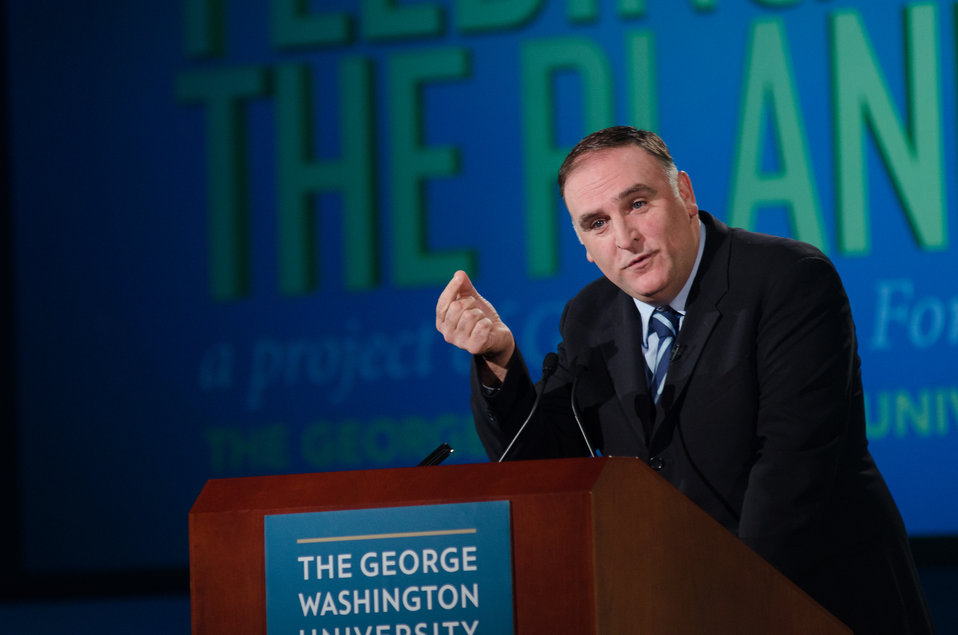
Jose Andres, Chef/Owner of ThinkFoodGroup, Founder of World Central Kitchen, and Culinary Creator and Advocate, speaking at the Feeding the Planet Summit of leaders from agriculture, business, finance, academia, Non Governmental Organization, government and media, along with a large contingent of college students to engage around promising innovations in global agriculture and food security. The Summit spotlights transformation and scalable developments in policy, practices and technologies with special attention to related issues of gender, climate change and urbanization at The George Washington University in Washington, DC, on Wednesday, Oct. 31, 2013.